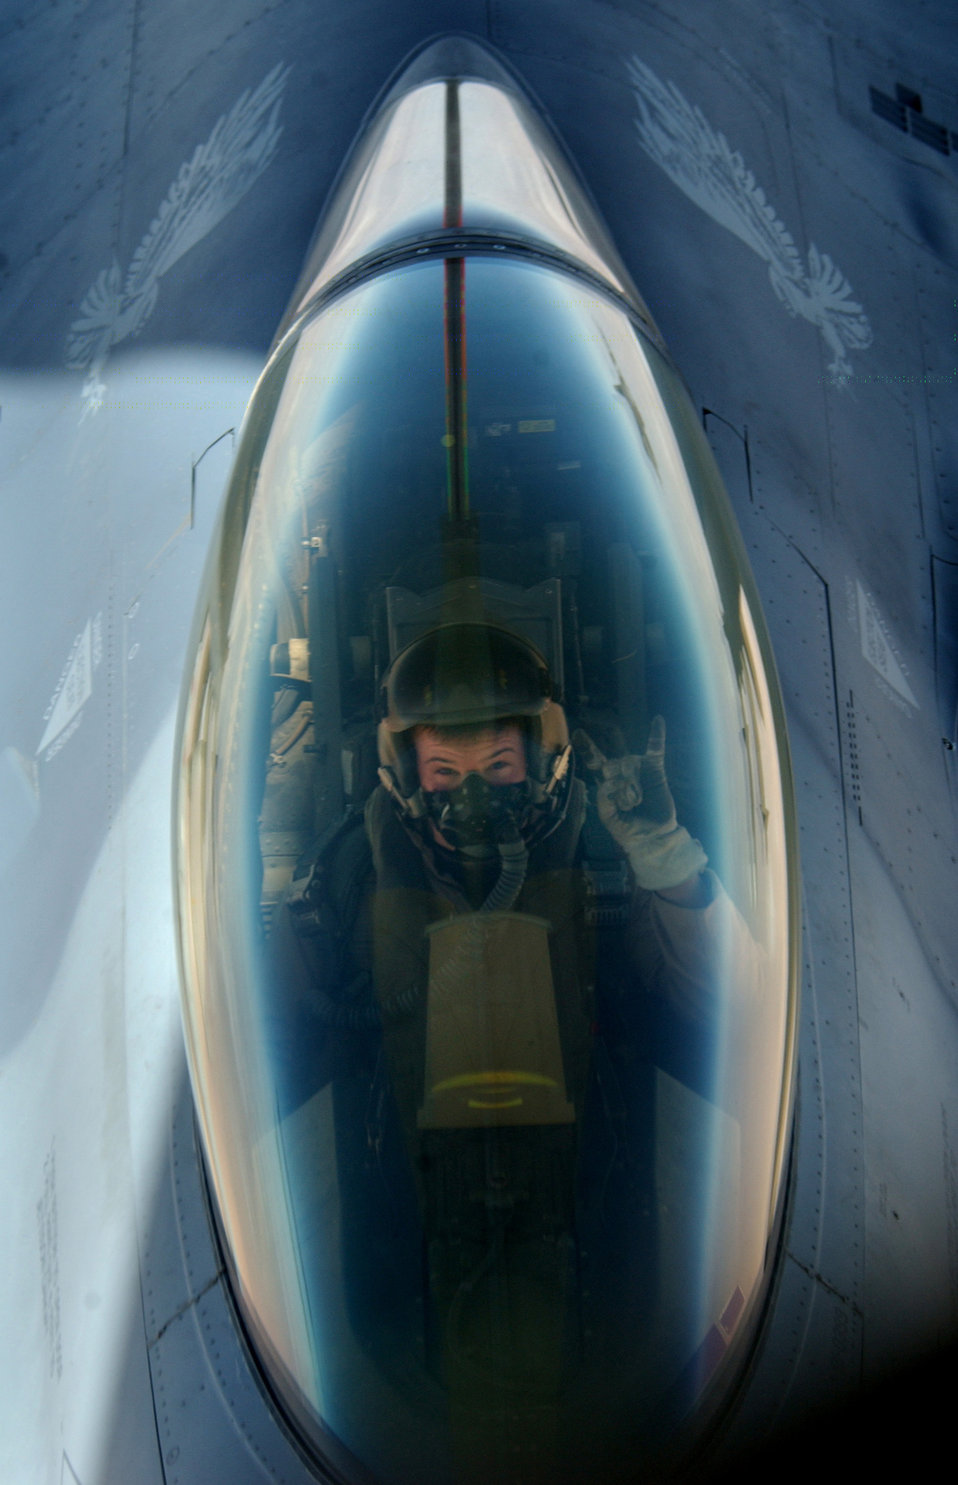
Call me weasel?

OPERATION IRAQI FREEDOM -- An F-16 Fighting Falcon refuels from a KC-135 Stratotanker in the skies near Iraq on March 22. The F-16s are from the 35th Fighter Wing